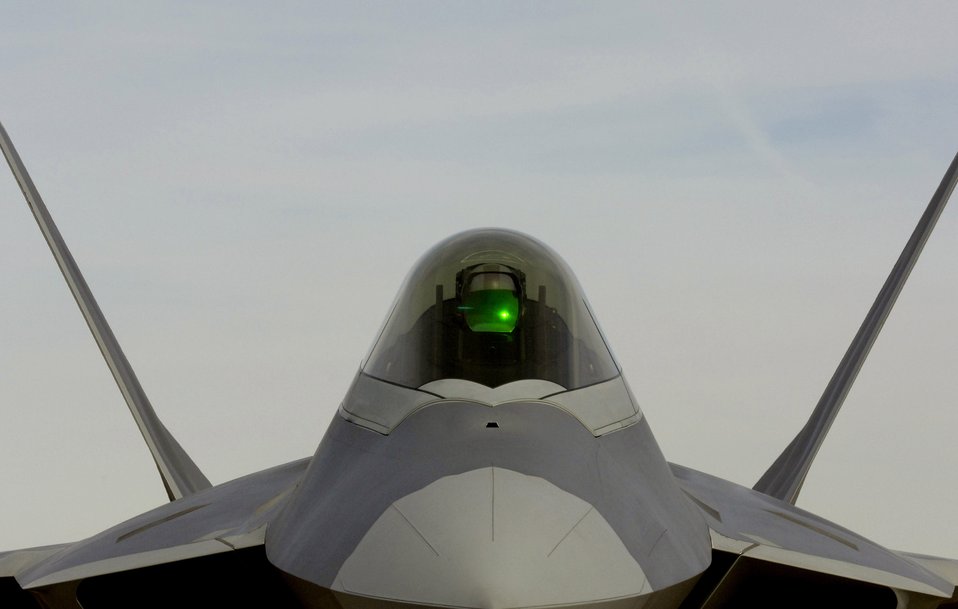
F-22s make mark at Red Flag

An F-22 Raptor from 94th Fighter Squadron at Langley Air Force Base, Va., sits on the flightline during Red Flag Feb. 6 at Nellis AFB, Nev. The exercise sharpens aircrews' warfighting skills in realistic combat situations. The aircraft are flying missions day and night at the nearby Nevada Test and Training Range where they simulate an air war. The Air Force and Navy, along with Australia and the United Kingdom militaries, are participating in the exercise. This is the first deployment to Red Flag for the 94th FS with F-22s.